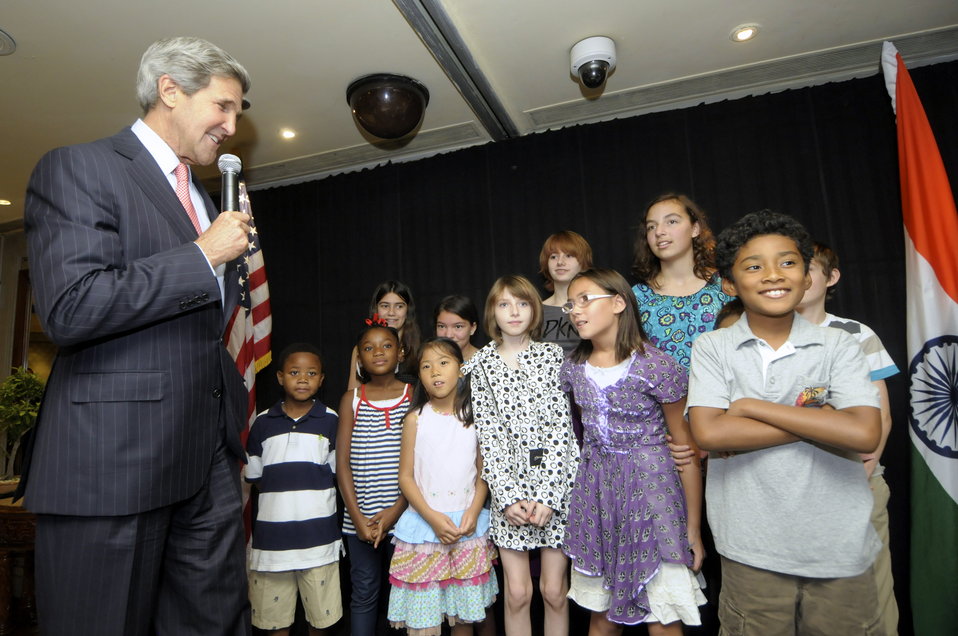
Secretary Kerry Greets Embassy New Delhi Staff

U.S. Secretary of State John Kerry jokes with the children of employees at the U.S. Embassy in New Delhi, India, during a staff meet-and-greet on June 25, 2013.